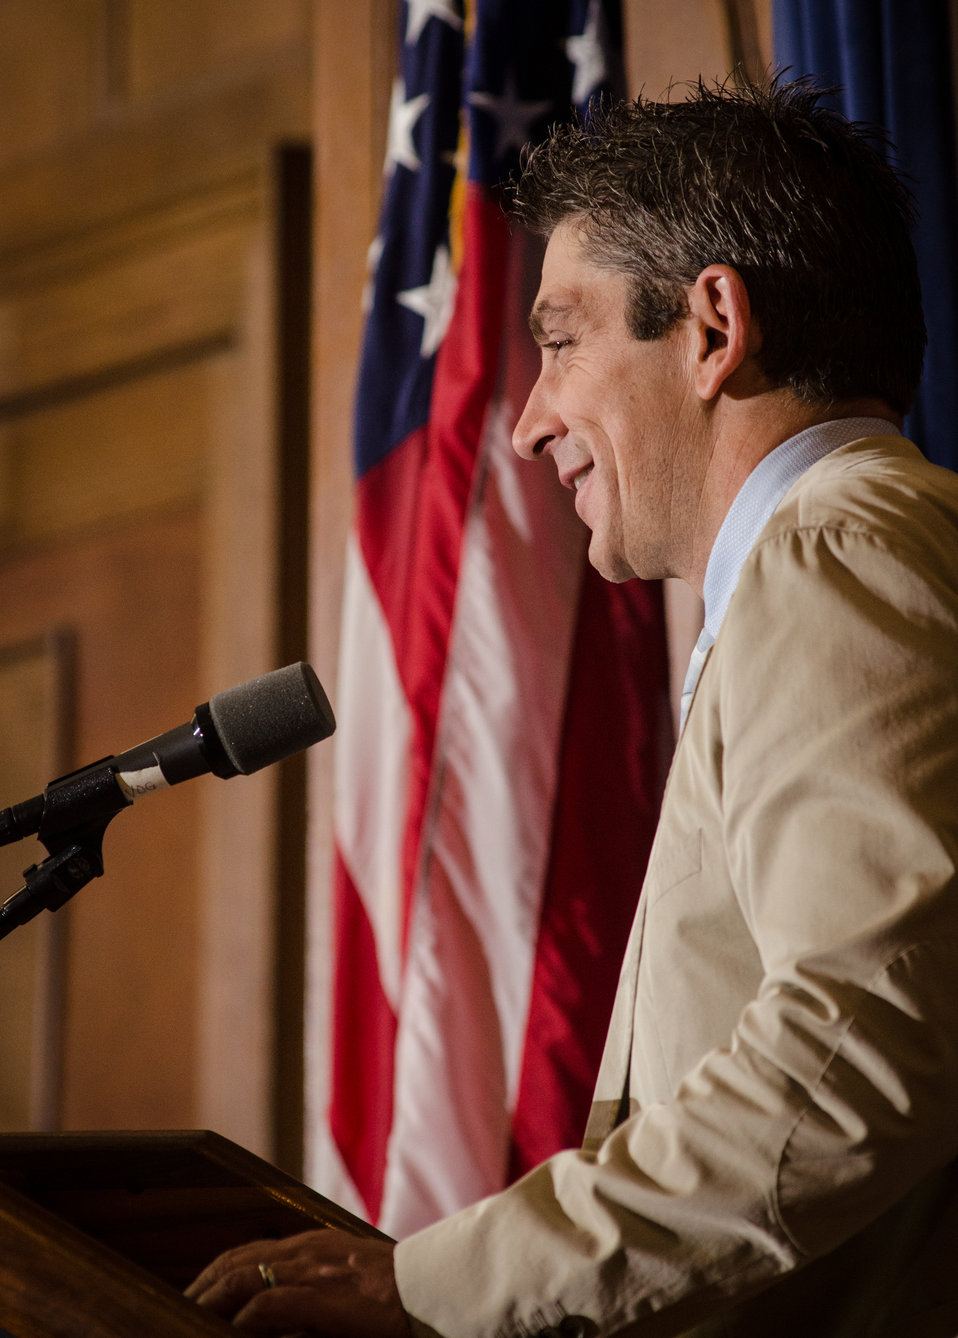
Keynote Speaker Poet Richard Blanco talks about differences in culture, language, and his childhood,at the 2013 National Hispanic Heritage Month ”Hispanics: Serving and Leading our Nation with Pride and Honor,” on Thursday, Sept. 19, 2013, in the Jefferson Auditorium, USDA Headquarters, Washington, D.C. Mr. Blanco stands as the youngest, first Latino, and first openly gay person to serve as the Presidential inaugural poet, on January 21 of this year.